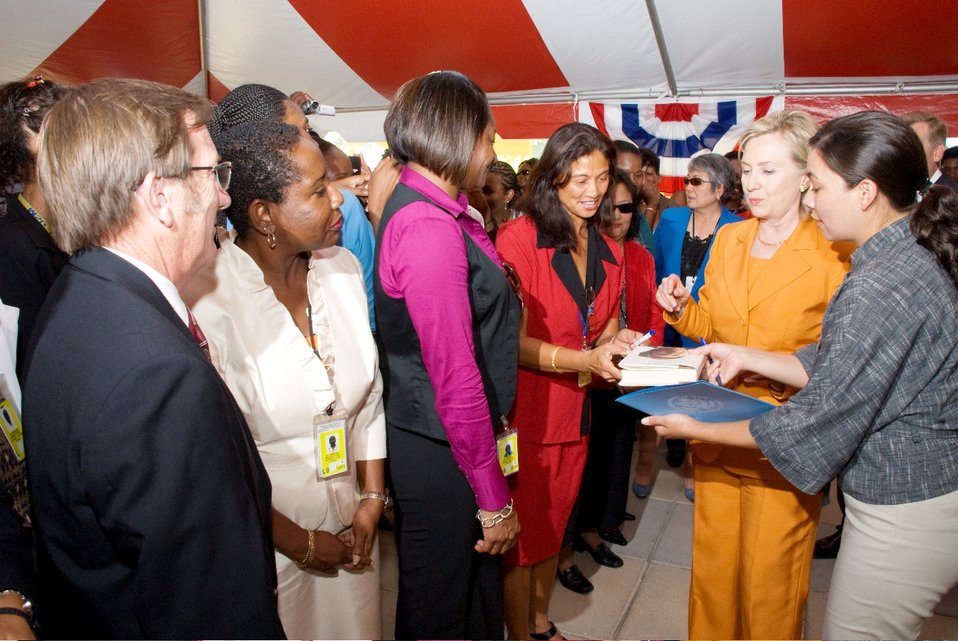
Secretary Clinton Meets With U.S. Embassy Bridgetown Staff and Families

U.S. Secretary of State Hillary Rodham Clinton visits the U.S. Embassy Bridgetown to visit with staff and families in Bridgetown, Barbados, on June 10, 2010.